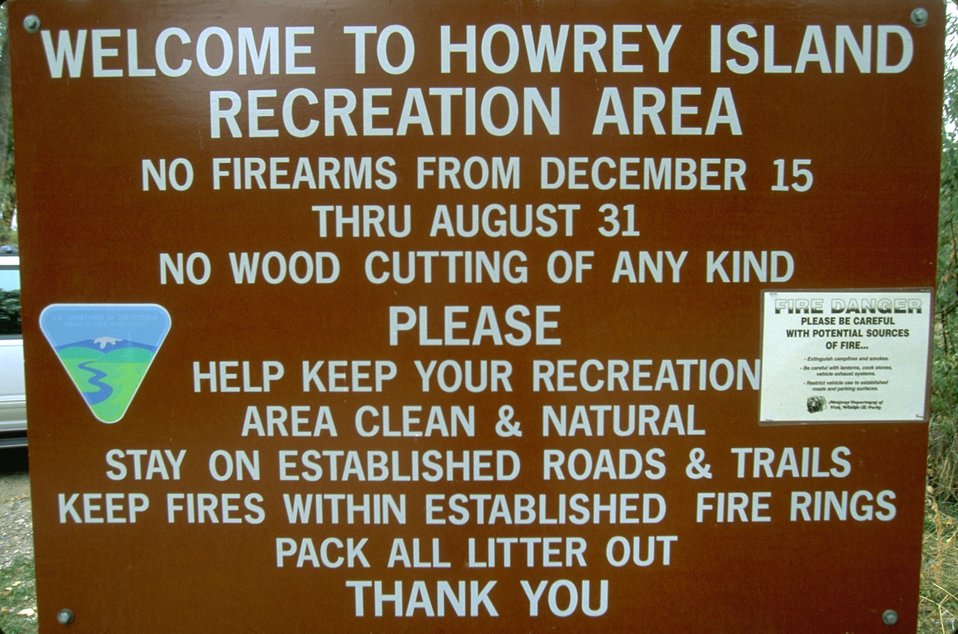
Entrance sign to Howrey Island Recreation Area